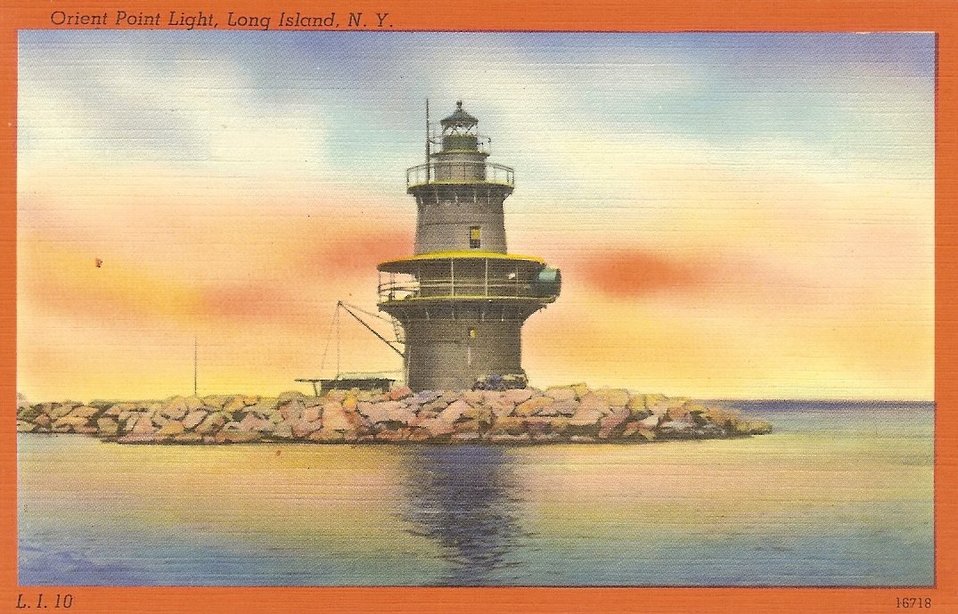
Orient Point Light